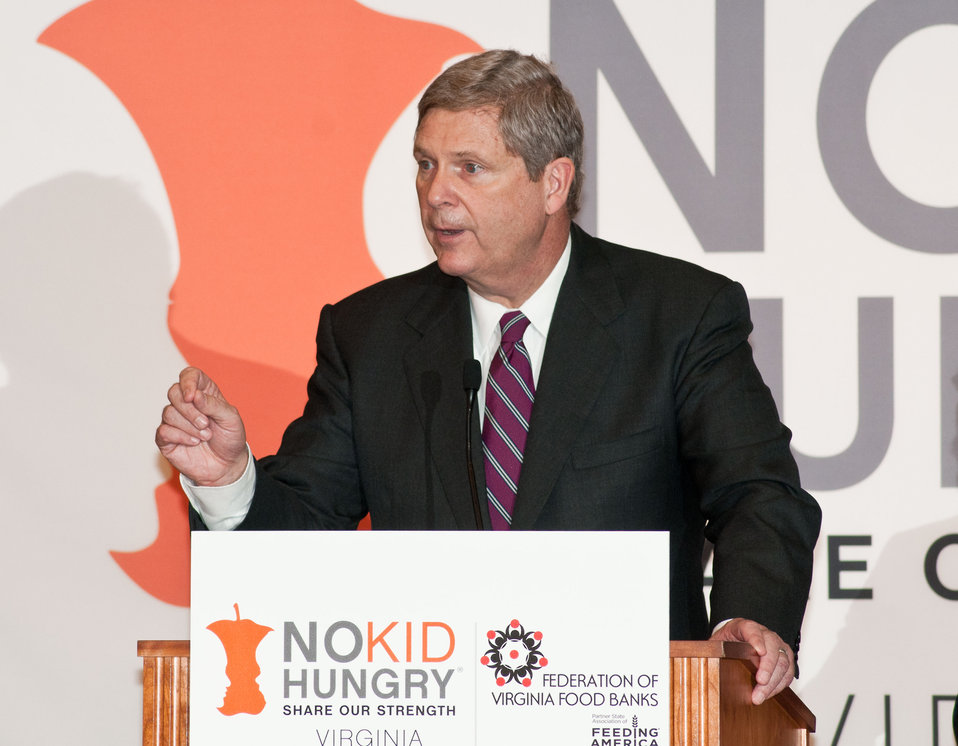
U.S. Department of Agriculture Secretary Tom Vilsack, helped launch the Virginia No Kid Hungry Campaign at Barcroft Elementary School in Arlington, VA, Tuesday, June 7, 2011. Vilsack said, “ We know our strength comes from out partnerships…” Campaign partners include Share our Strength, the Federation of Virginia Food Banks, corporate partners, education leaders, government agencies and community organizations. The Virginia Summer Meals for Kids Program is funded by the USDA and provides free summer meals at hundreds of sites across the Commonwealth of Virginia, but according to a new report released today by the Food Research and Action Center, more than 80 percent of those eligible do not participate. Governor McDonnell announced and stressed that all parents who want free meals for their kids in need, can simply call 211 to find a summer meals site near them.